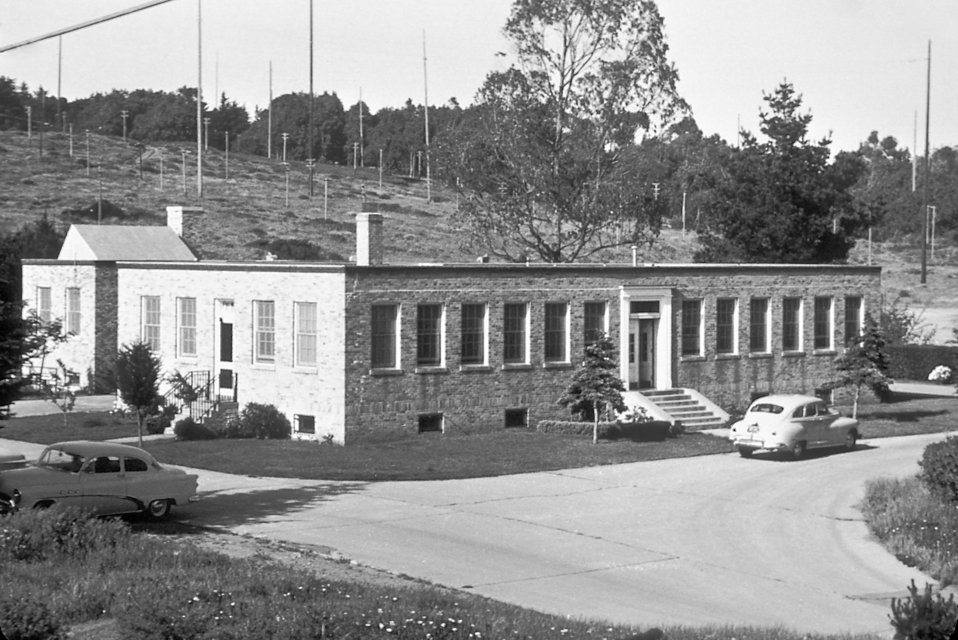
A photograph of plague laboratory buildings at a CDC San Francisco, CA. field station.